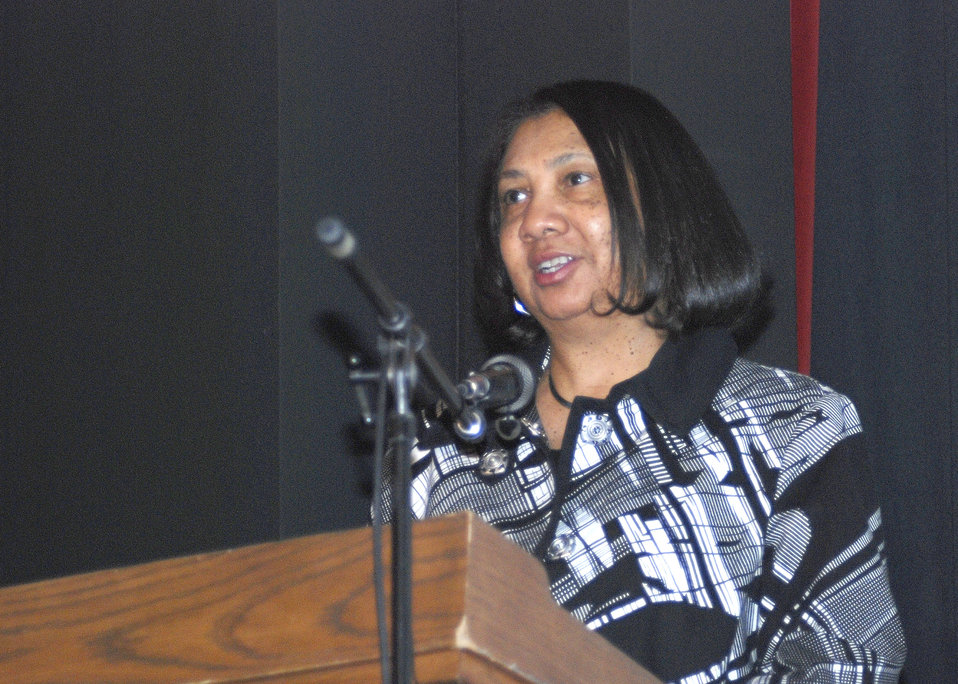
The U.S. Department of Agriculture (USDA) held the Cultural Transformation Employee listening sessions in Davis, CA, on Monday, April 12, 2010. Assistant Secretary for Administration Dr. Alma Hobbs makes remarks prior to USDA employees voicing their concerns with issues at the Department and made suggestions for correcting them and improving the image of USDA. USDA photo 10di1297-0162.